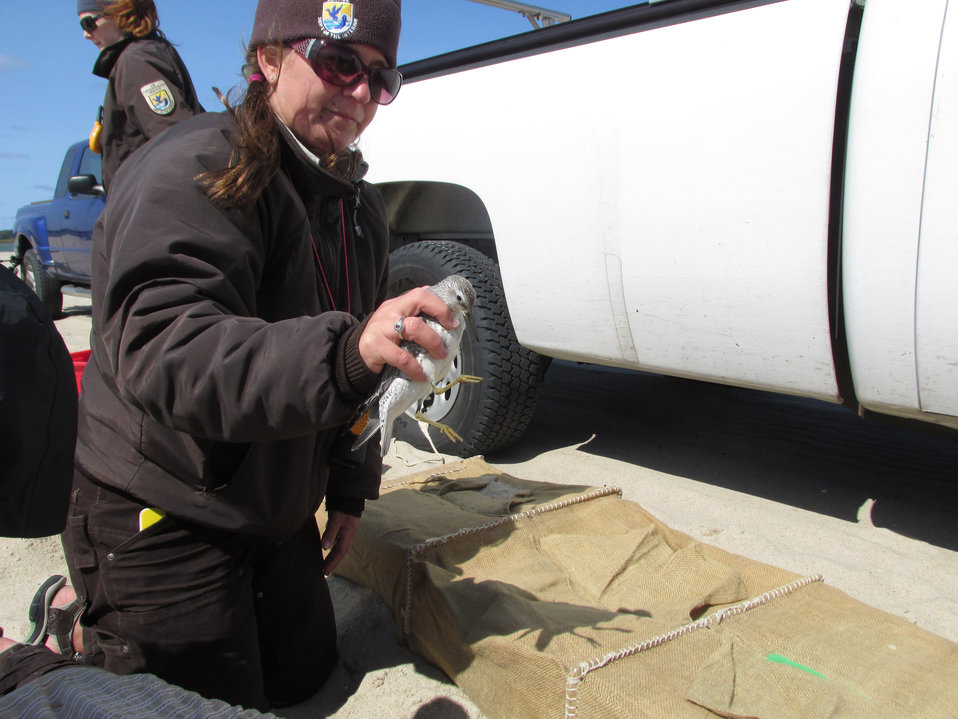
Red knot cannon netting in Cape Cod

Another shot of Stephanie Koch hold Credit: Meagan Racey/USFWS